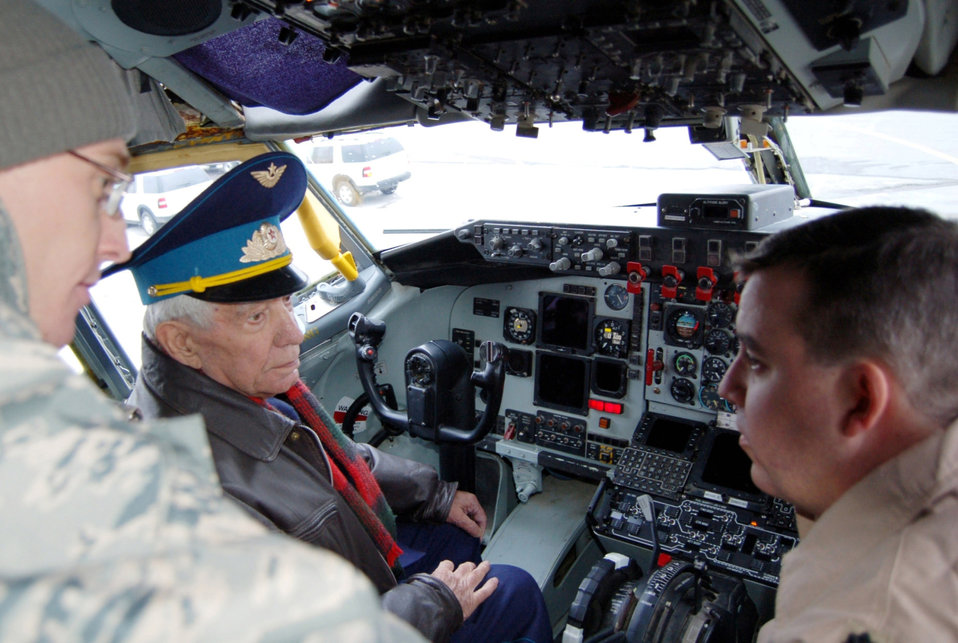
Kyrgyz war heroes, Manas Airmen enjoy Veterans Day

Lt. Col. Eric Casler explains the dynamics of flying the KC-135 Stratotanker to retired Soviet Col. Vasili Strelnikov as 1st Lt. Alkesandr Yarovinskiy interprets. The base hosted the veterans for an appreciation day visit, which included a tour, dinner and the kickoff of a new program established to assist them with some of their living expenses. Colonel Casler is the 22nd Expeditionary Air Refueling Squadron commander. Lieutenant Yarovinskiy is a 376th Air Expeditionary Wing coalition liaison.